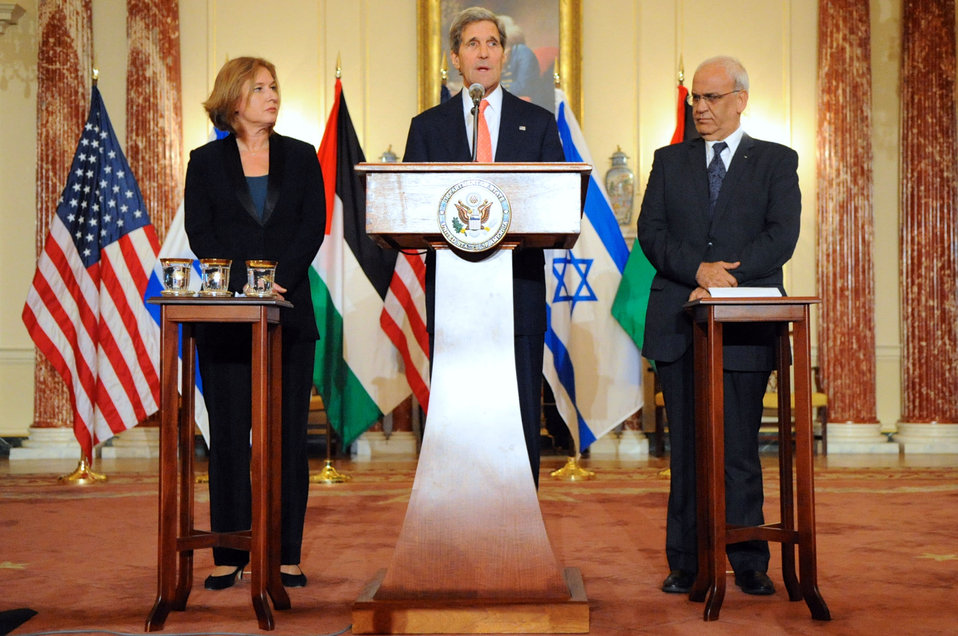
Secretary Kerry, Israeli Justice Minister Livni, and Palestinian Chief Negotiator Erekat Address Reporters

U.S. Secretary of State John Kerry, Israeli Justice Minister Tzipi Livni, and Palestinian Chief Negotiator Saeb Erekat address reporters on the Middle East Peace Process Talks at the U.S. Department of State in Washington, D.C., on July 30, 2013.